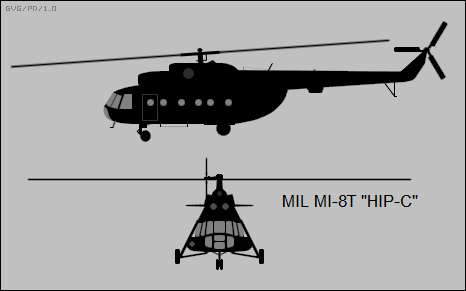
2-view silhouettes of the Mil Mi-8T